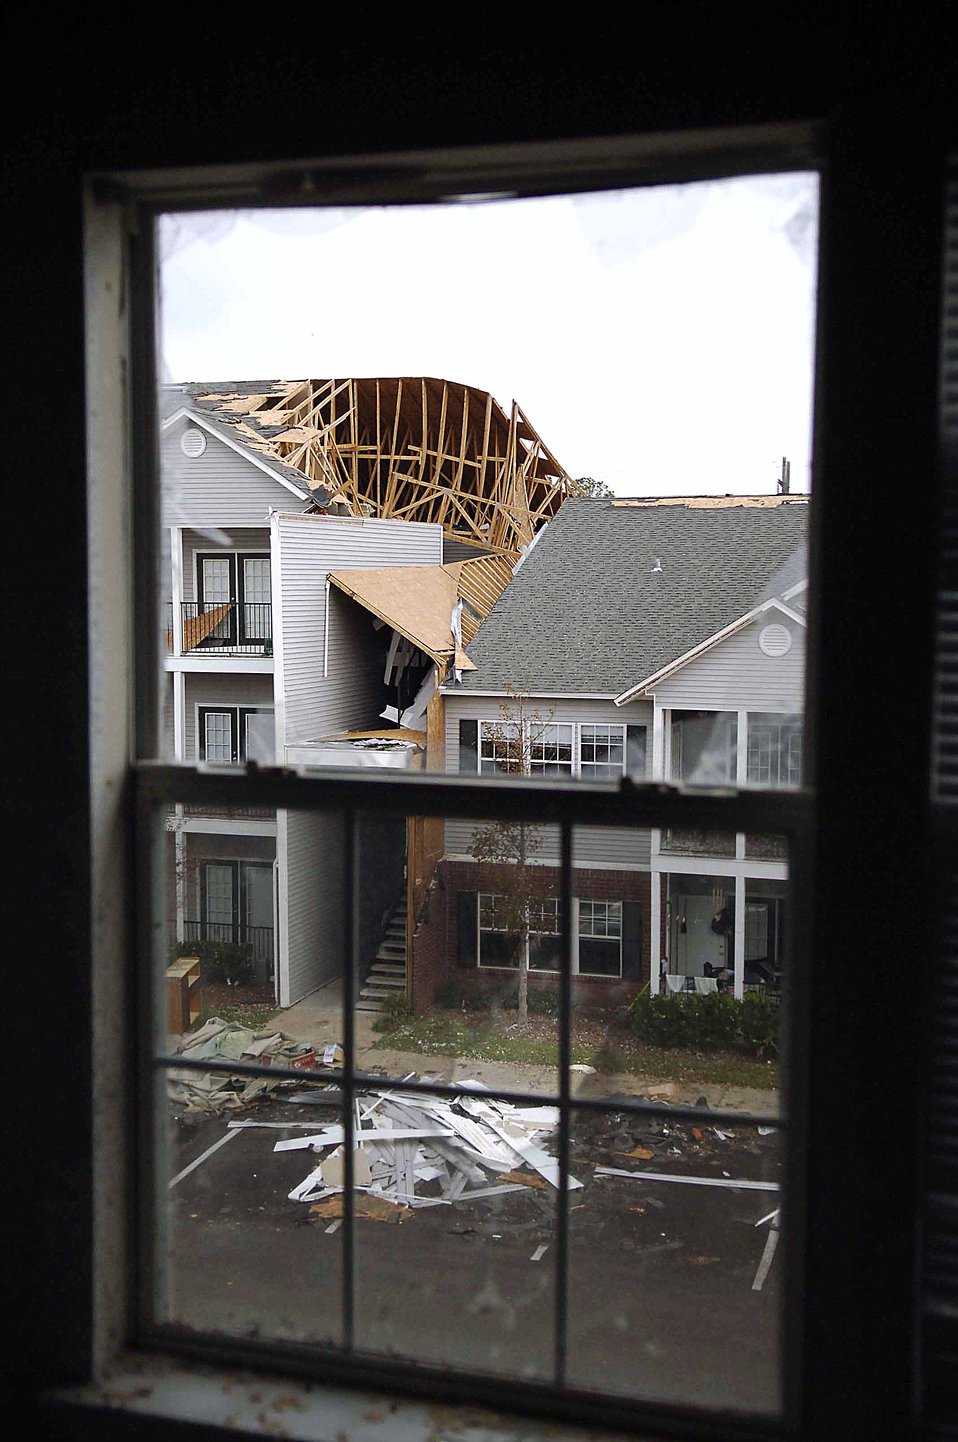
Displaced Airmen return to Keesler AFB for first time after hurricane

MISSISSIPPI -- The view from an apartment complex window here displays the devastation caused by Hurricane Katrina.